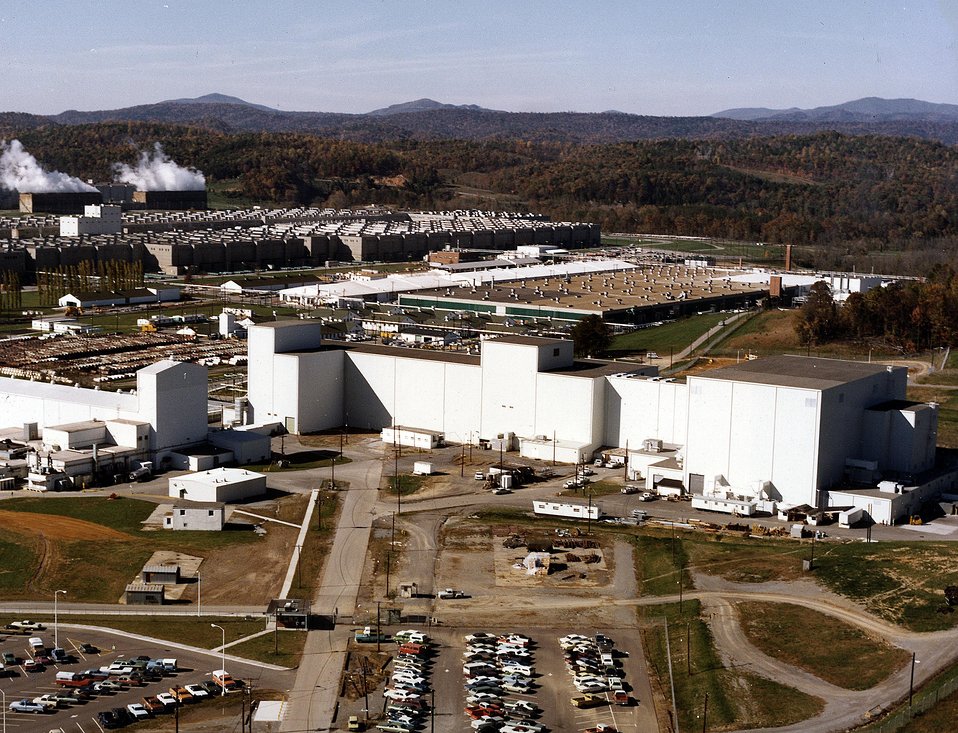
Energy Research and Development Administration.